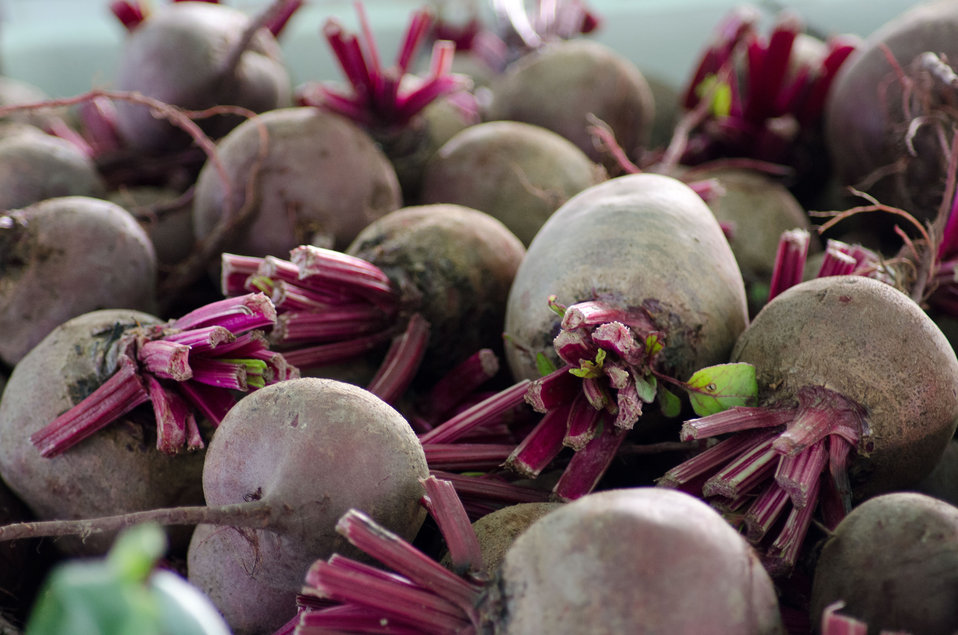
Beets for sale at the Bath County Agricultural Education and Marketing Center, Owingsville, KY, on Friday, July 15, 2011. The Center was the recipient of a $400,000 Rural Business Enterprise Grant. It has given farmers and producers from Bath and surrounding counties the opportunity to manufacture and market their locally grown and locally produced value-added and “Kentucky Proud” branded products, including but not limited to, fresh produce, artisan crafts and specialty food products. The Center is open year-round and allow residents to sell products in four different retail categories, including Kentucky products, regional crafts, “green” groceries and bakery/deli. Several producers expressed their gratitude for Rural Development’s assistance in making the center a reality. The project was made possible through funding the American Recovery and Reinvestment Act of 2009 enacted by the 111th United States Congress in February 2009 and signed into law on February 17, 2009, by President Barack Obama.